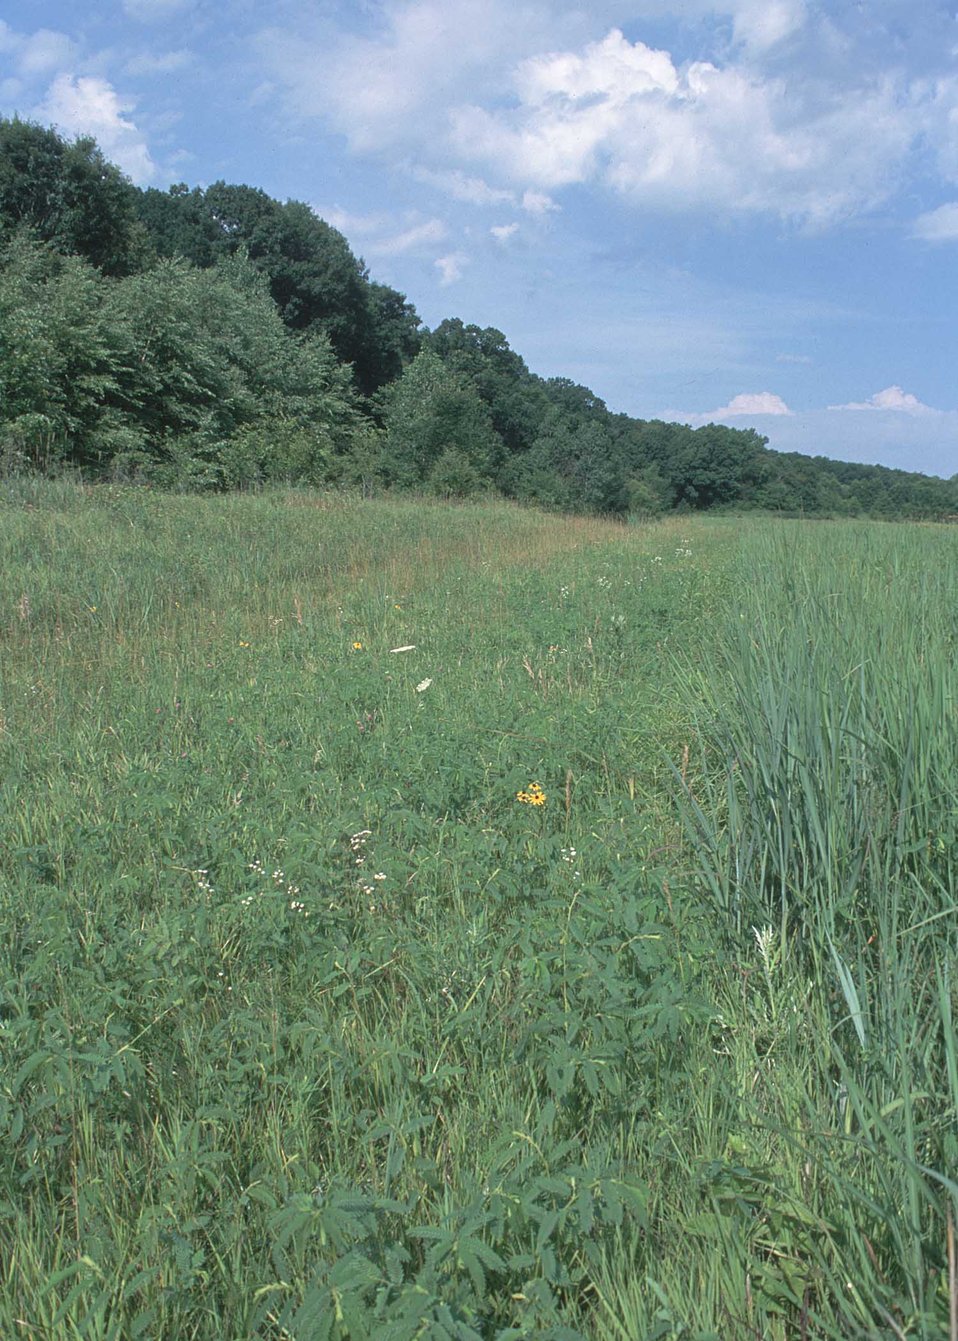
Partridge pea and short grass landscape

Partridge pea and short grasses are part of the transition from woodland to a native grass field.